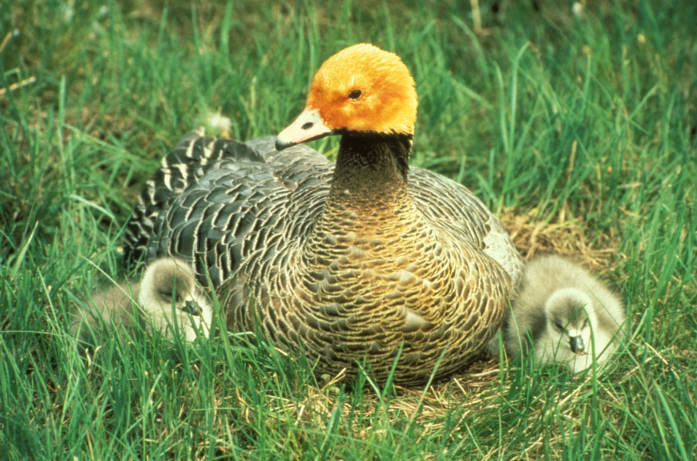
Emperor goose and chicks

Yukon Delta National Wildlife Refuge/USFWS